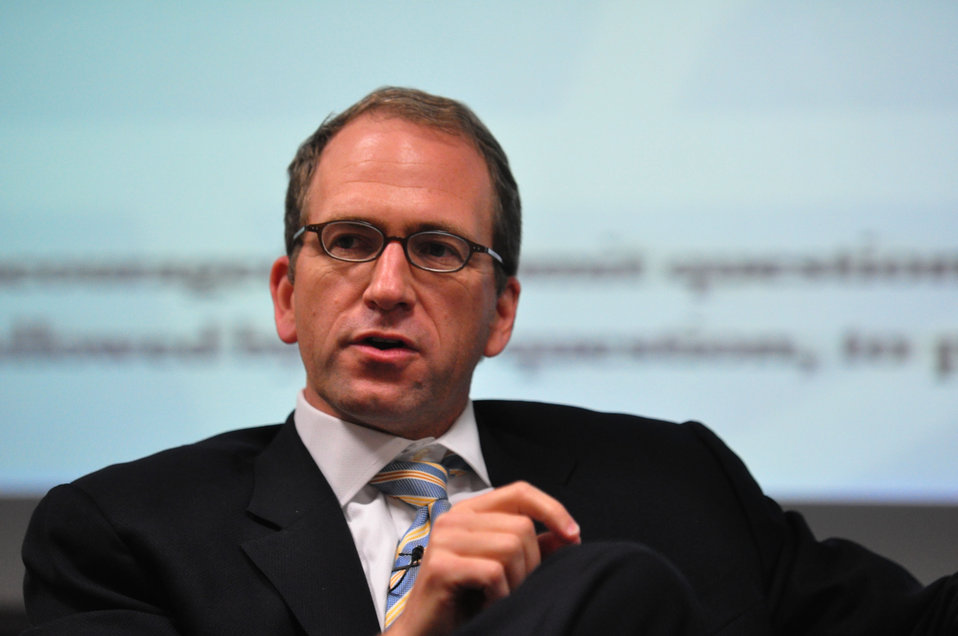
Tennessee Valley Corridor Summit Oak Ridge

13-062 DOE photo Lynn Freeny 5-29-2013 Oak Ridge Tennessee